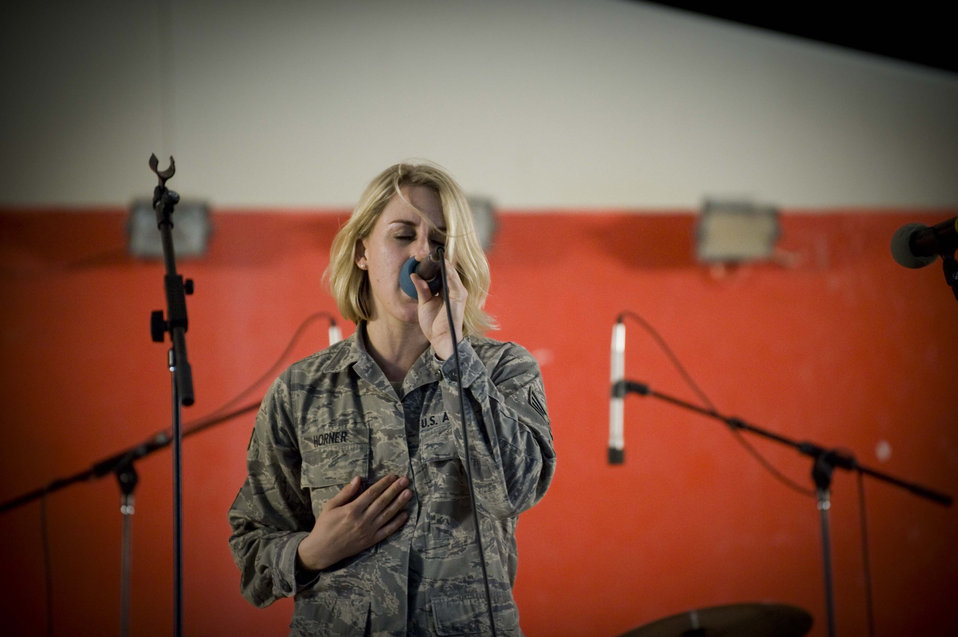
Singing for the troops

Senior Airman Jamie Horner competes with two other finalist for the 379th Air Expeditionary Wing 'The Voice' competition in Southwest Asia, June 23, 2012. After this performance, Horner began singing with the AFCENT Band, Vector, due to their lack of a female vocalist. Horner is deployed with the 379th Expeditionary Civil Engineer Squadron and is a native of Redding, Calif.